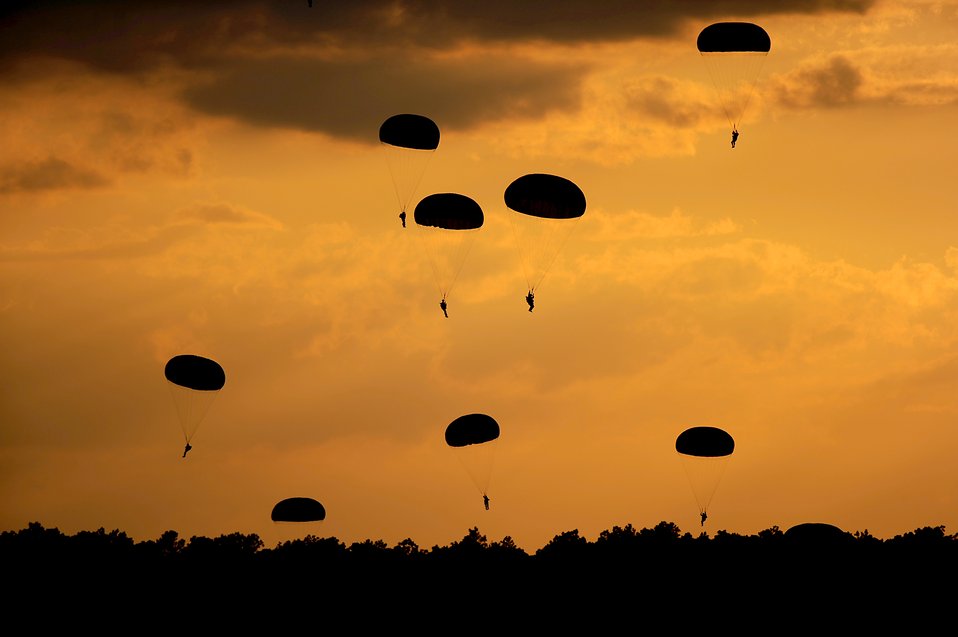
Airborne Operations

U.S. Army Soldiers from the 82nd Airborne Division, Ft. Bragg, N.C., parachute down on to drop zone Luzon after jumping from a C-130 Hercules during Airborne Operations on Sept. 12, 2010 at Ft. Bragg, N.C.